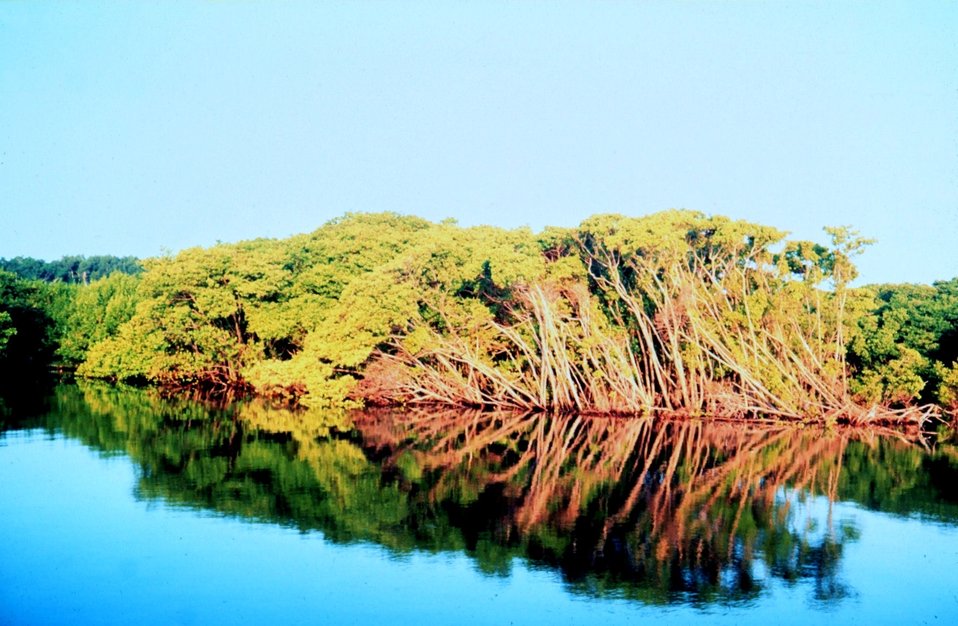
Mangroves along waterway in Palm Beach County